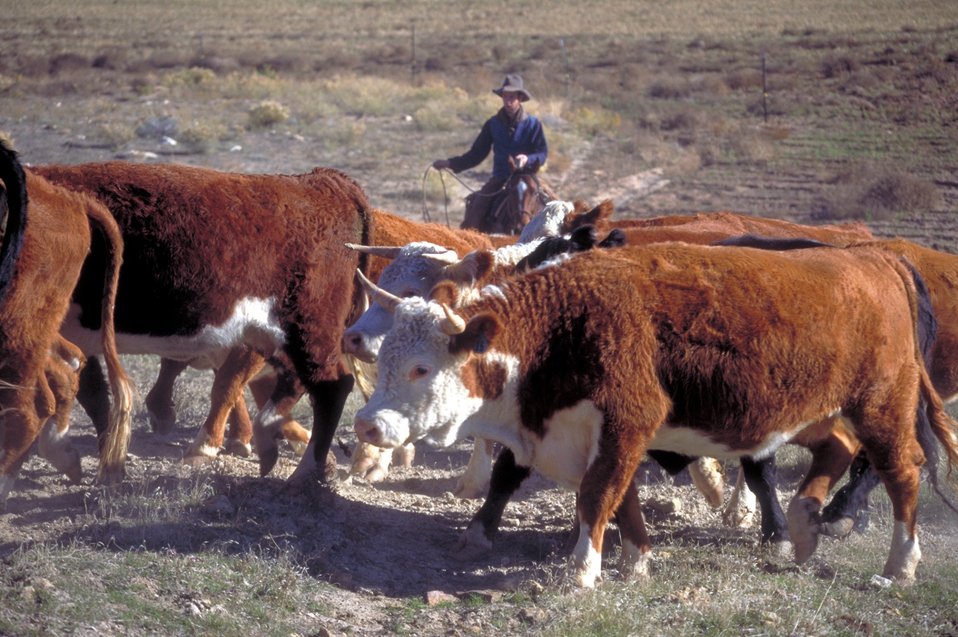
Working cowboys living near Vernal, Utah.